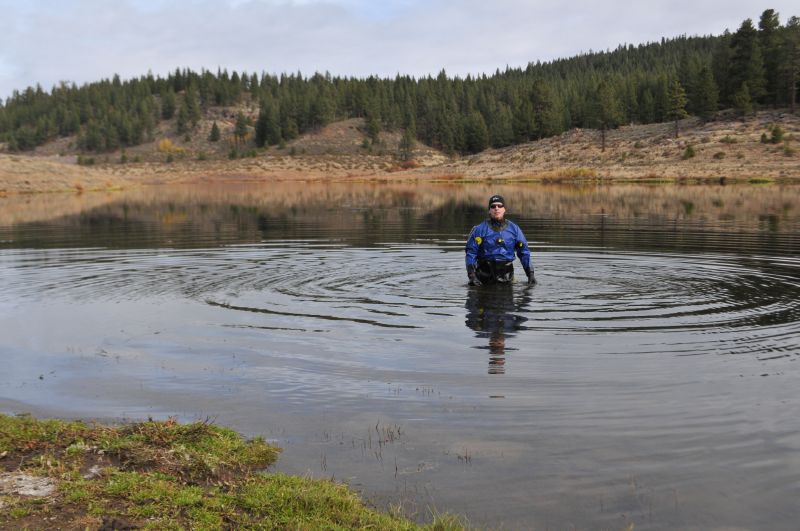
MARTIS CREEK LAKE, Calif. (Oct. 31, 2010) - Phil Caterino of the Tahoe Divers Conservancy wades in to place sunlight barriers here Oct. 31 as part of a project to eradicate invasive Eurasian milfoil plants from the lake bottom. The gas-permeable barriers kill the milfoil plants by blocking sunlight, but don't disturb other plant and animal species native to the lake. The Corps is partnering with the Tahoe Divers Conservancy on the project, funded by a $20,000 grant from the Community Foundation of Western Nevada's Truckee River Fund.